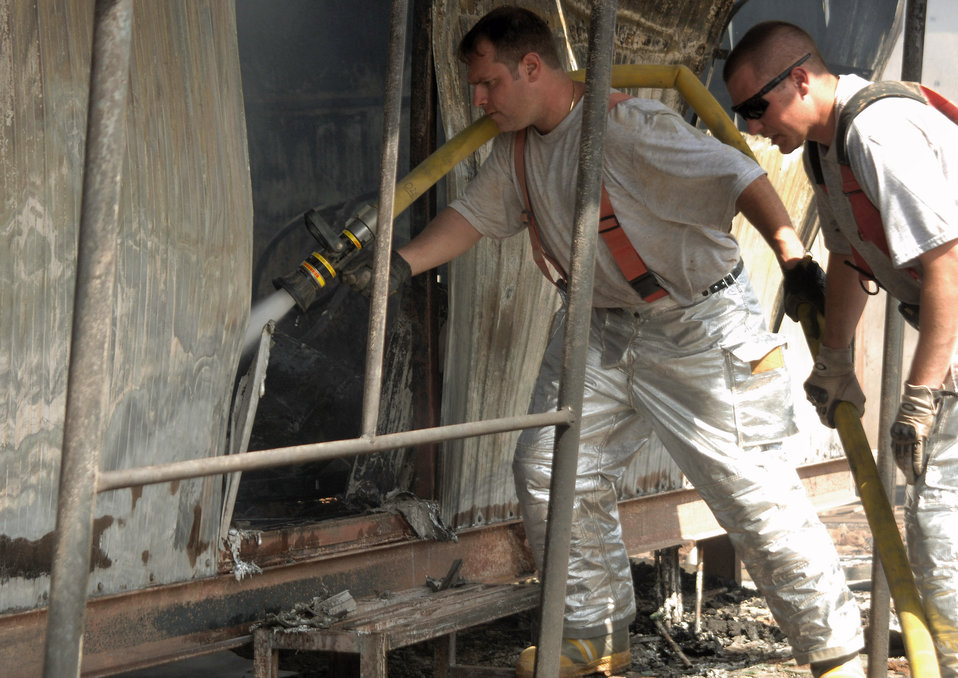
AF, Army firefighters

Firefighters Staff Sgts. Chris Bakupoulos (left) and Van Smith douse the remainder of a fire that destroyed a collection of trailers July 22 at Joint Base Balad, Iraq. The Airmen helped contain a two-alarm fire, limiting the damage to six closely situated buildings. Firefighters terminated the emergency at approximately 4:30 p.m., and crews remained on scene to extinguish hotspots and prevent a new fire from starting. Both Airmen are deployed from Charleston Air Force Base, S.C.